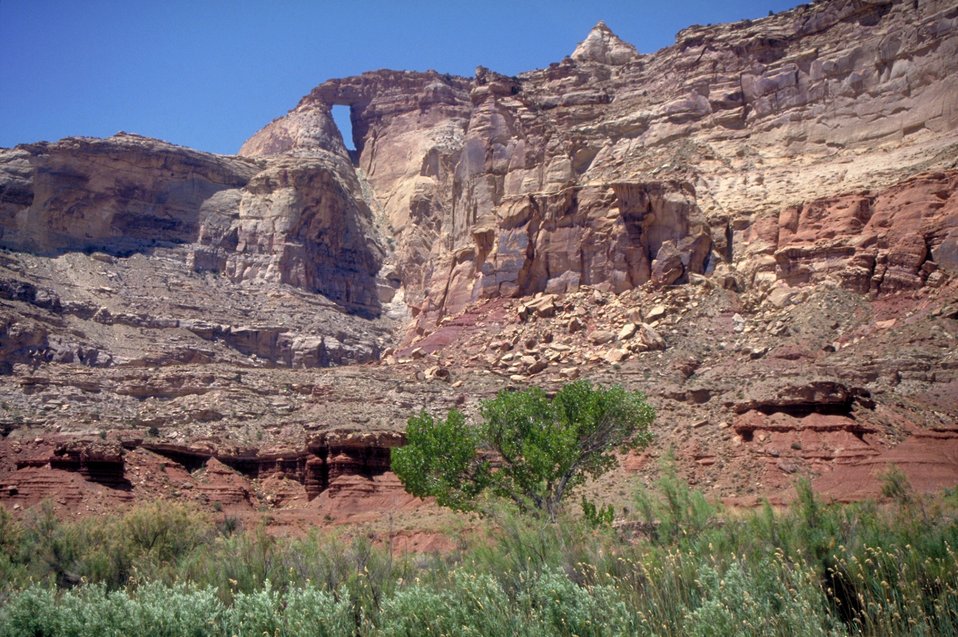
Hondo Arch along the Red Canyon Loop, San Rafael Swell.